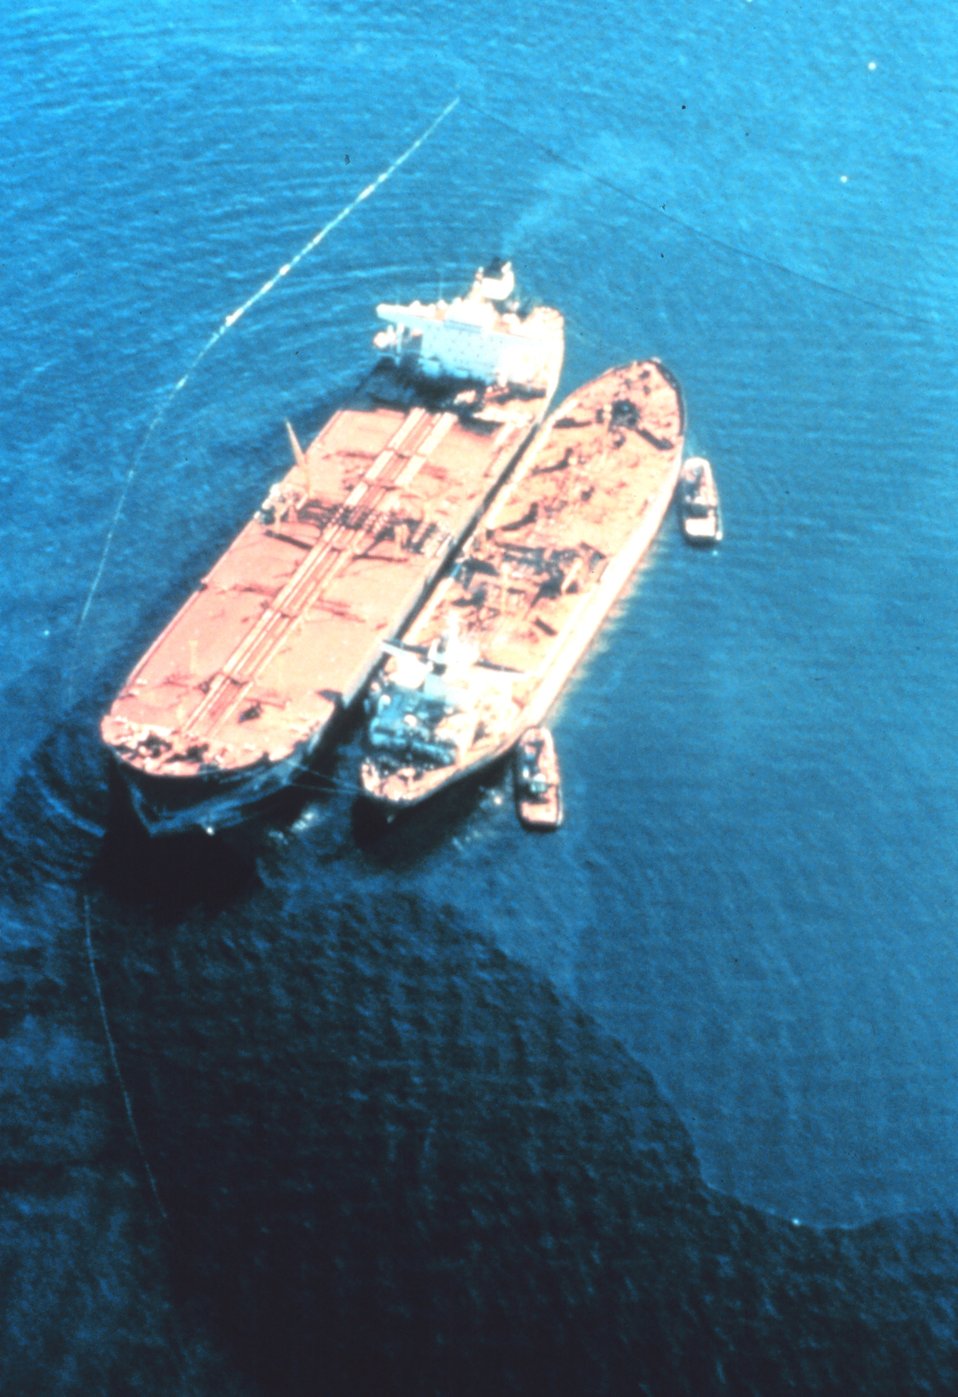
EXXON VALDEZ aground on Bligh Reef being lightered to reduce oil spillage and lighten ship to get off reef.